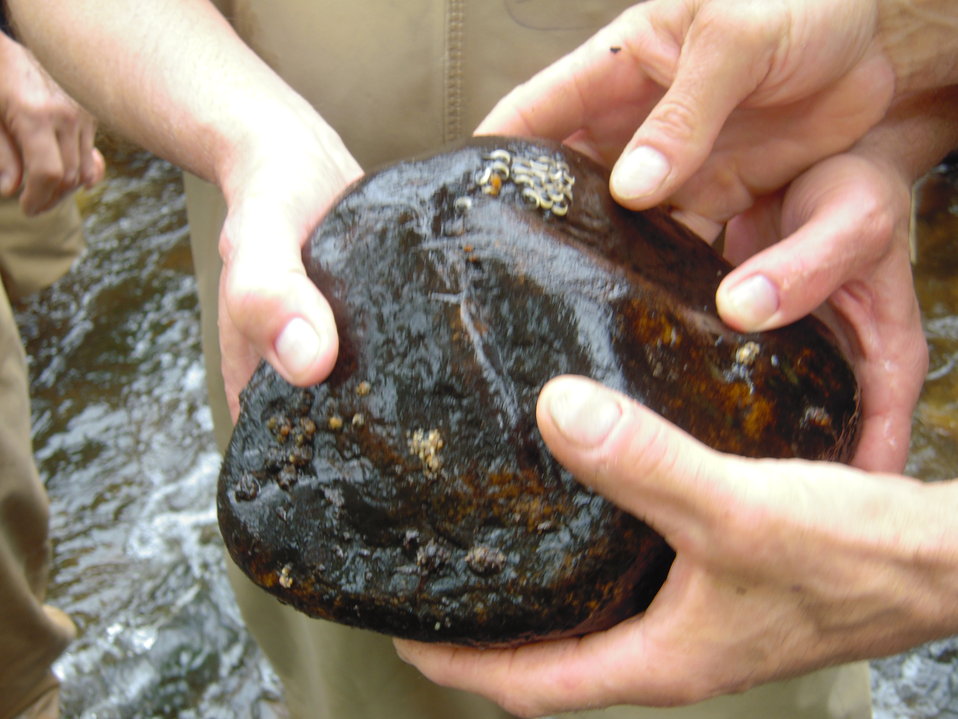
Stone with eggs found